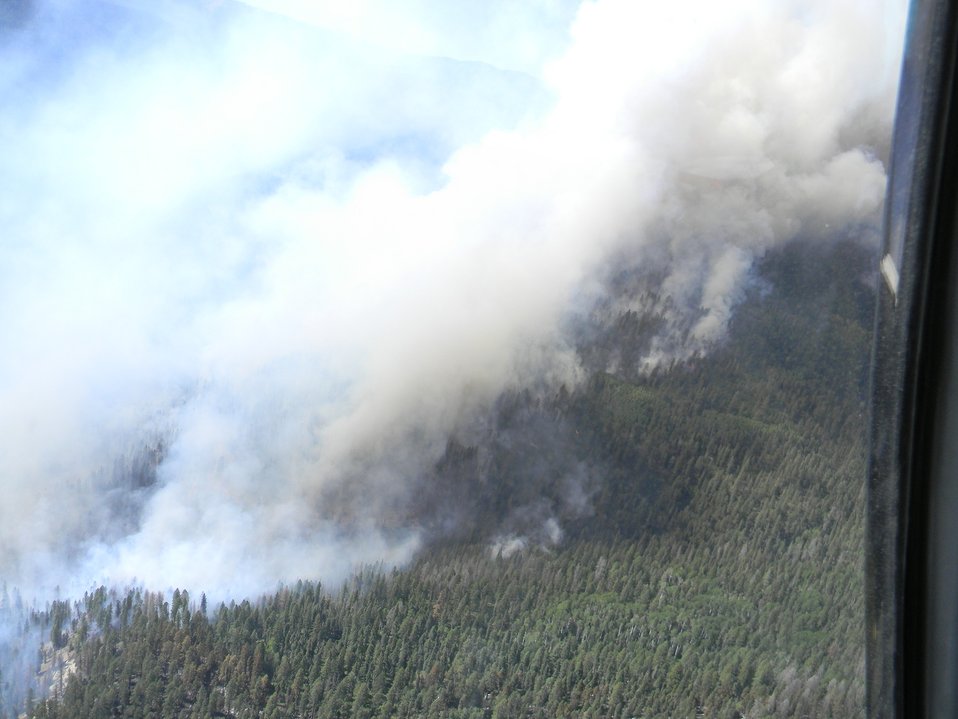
The Little Sand Wildfire burns in the San Juan National Forest near Pagosa Springs, CO, on Tuesday, June 5, 2012. The wildfire was started by a lightening strike on May 13, 2012. The fire is in rugged and inaccessible terrain, north of the Piedra River, and is currently estimated at 14,224 acres with 30% containment as of June 20, 2012.